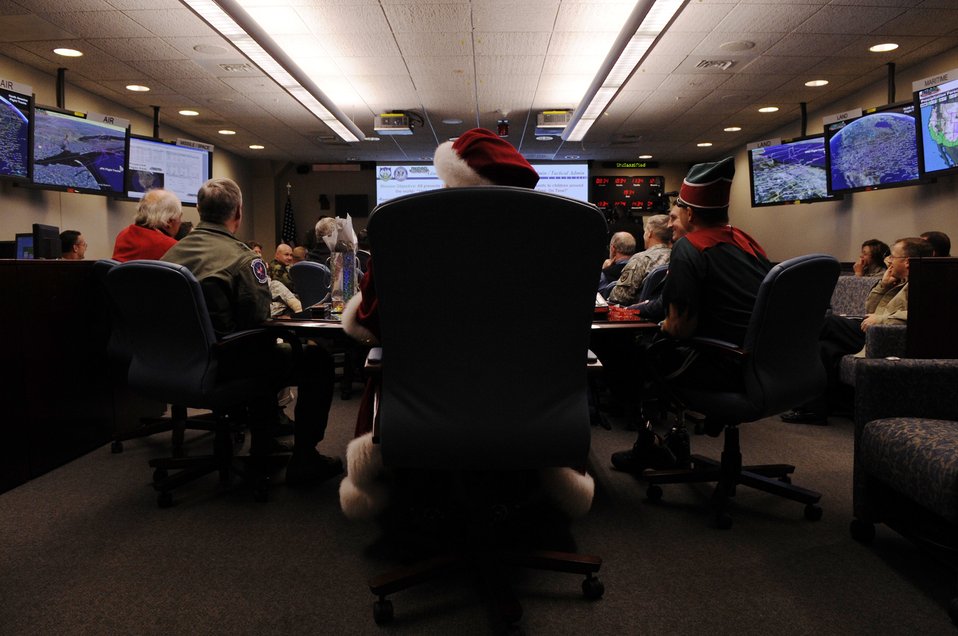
Santa Claus is coming to town

Santa Claus and Elf Dee make a surprise visit to the North American Aerospace Defense Command Tracks Santa Battle Cab Dec. 23 at Peterson Air Force Base, Colo. Santa received Federal Aviation Administration, weather and air mission briefs.